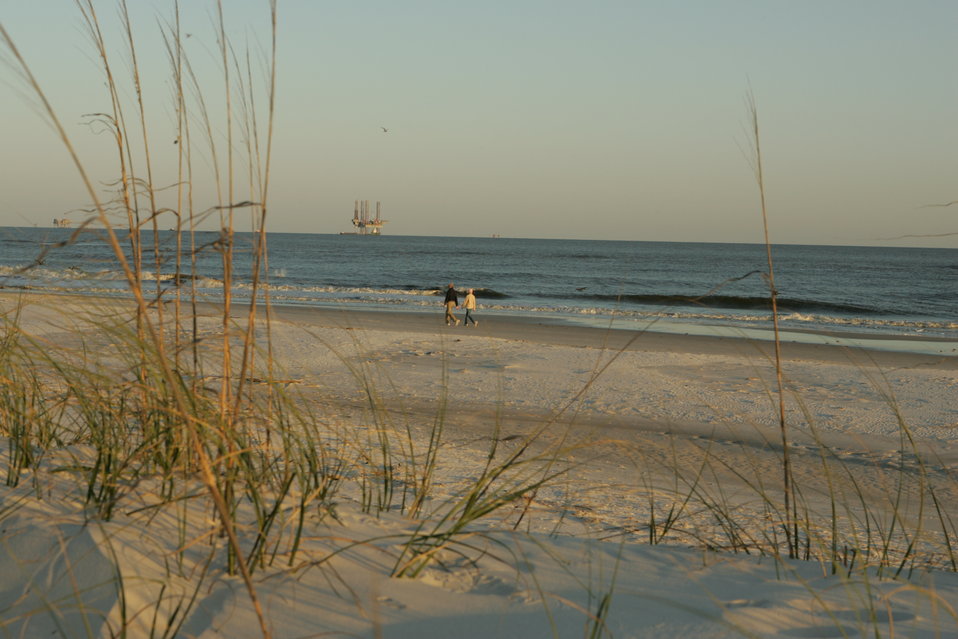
A lovely walk on the beach.

A lovely walk on the beach, with oil well in the background.